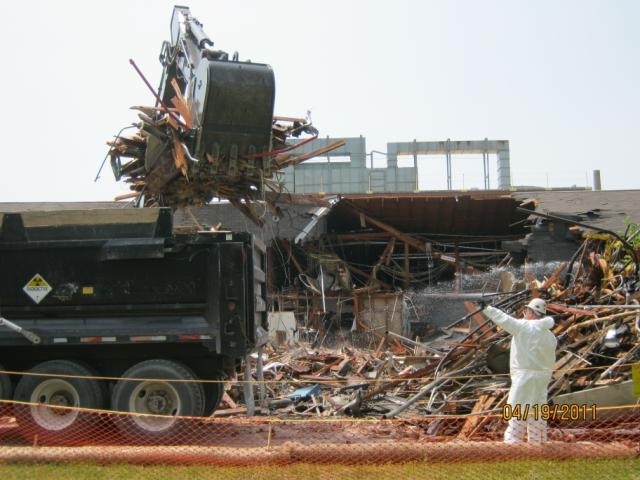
Oak Ridge Stays on Course for Recovery Act Completion in September

Workers demolish Building 3550 in the Oak Ridge National Laboratory’s central campus. It was the twelfth building to be decontaminated and demolished in the 34-facility decontamination and demolition project.